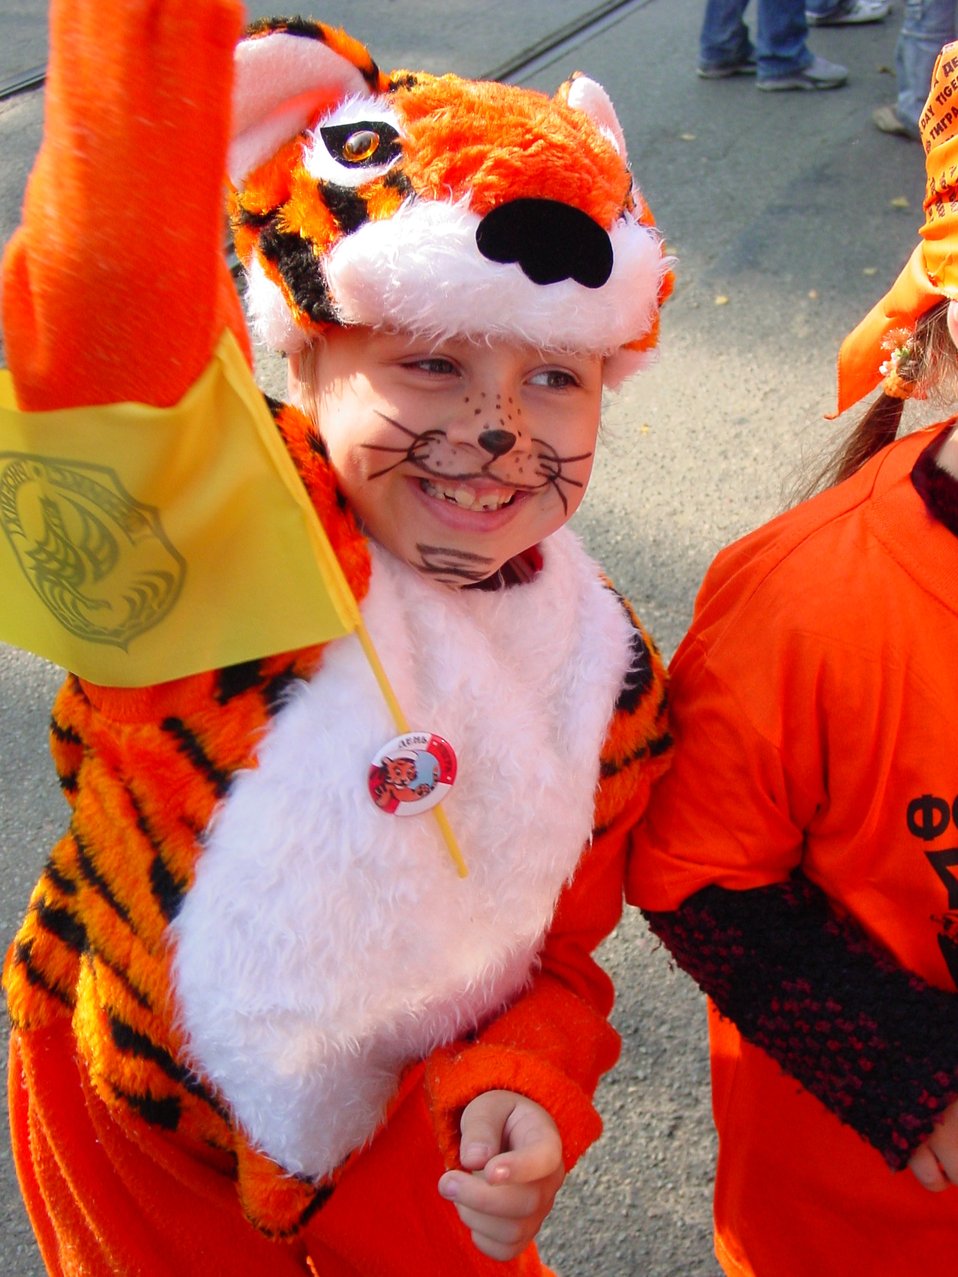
Tiger Day in Vlad 2006

Tiger conservation festival in Vladivostok.